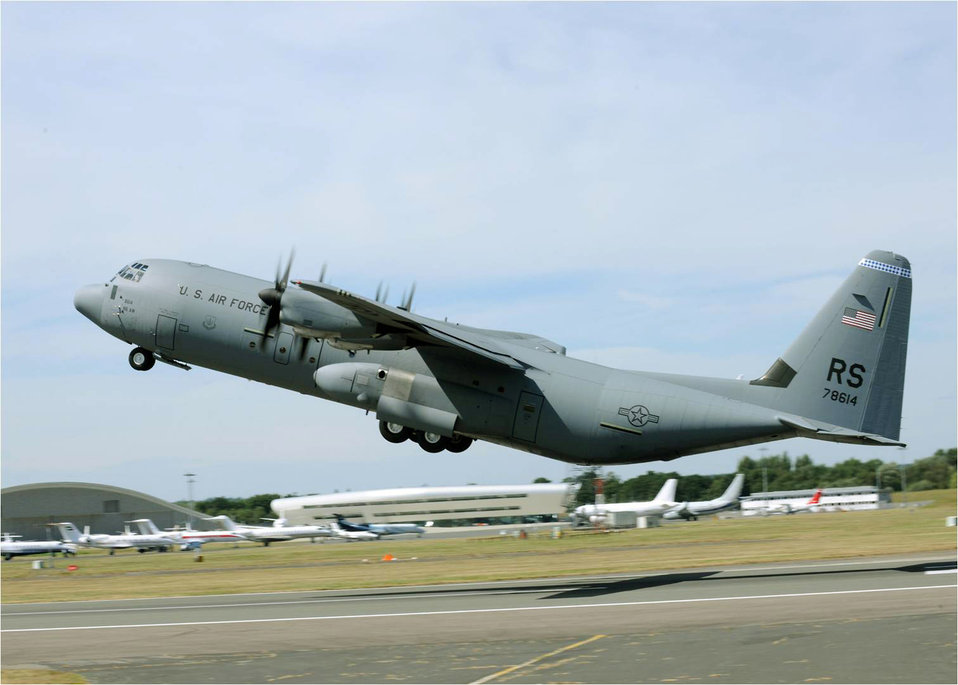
C-130J at Farnborough 2010

A C-130J Super Hercules takes off from the Farnborough Aerodrome runway July 19, 2010, in Farnborough, England.